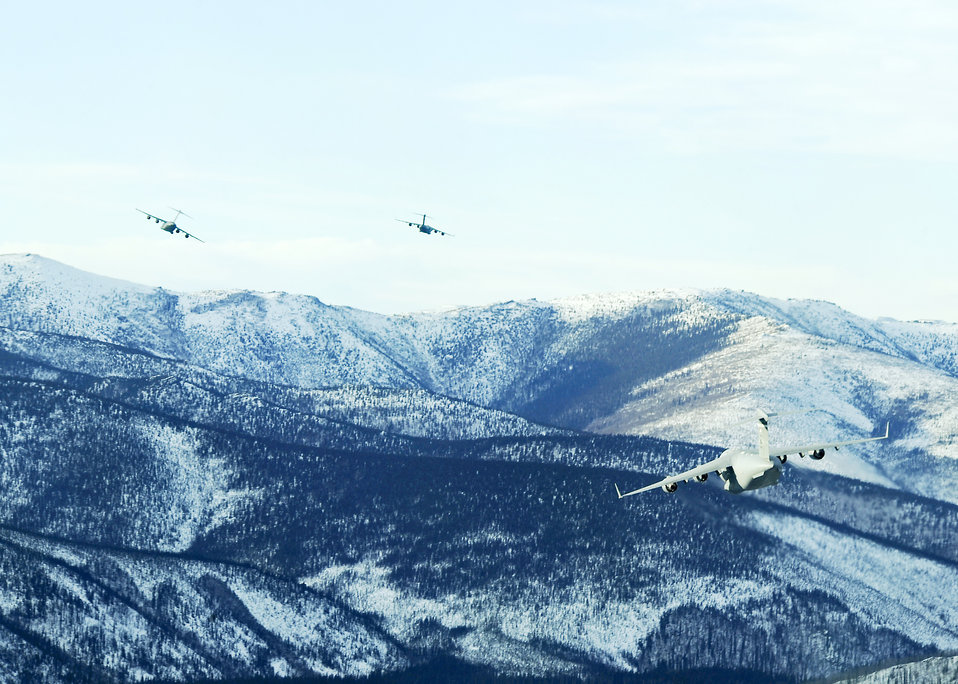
C-17s participate in Pacific Rendezvous

C-17 Globemaster IIIs from the Pacific Air Forces and Air Mobility Command soar over Alaskan mountain ranges near Fort Greely, Alaska, Feb. 10, 2010. The aircraft were participating in an exercise that involved exploring capabilities in large formations and improving tactical awareness among aircrews.